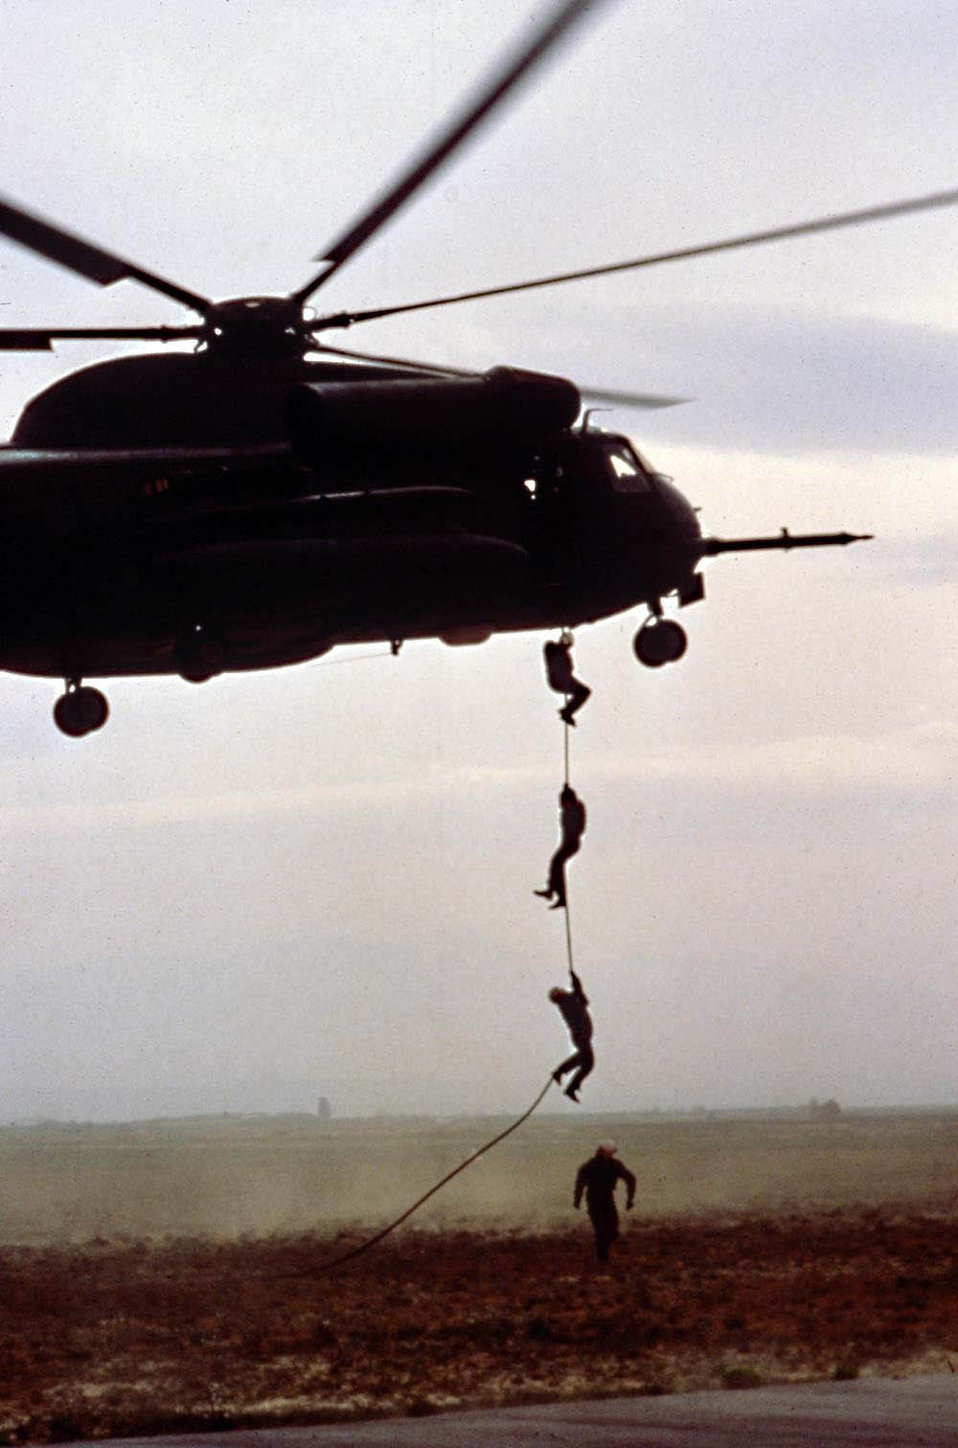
Fast rope

FILE PHOTO -- Pararescuemen do a